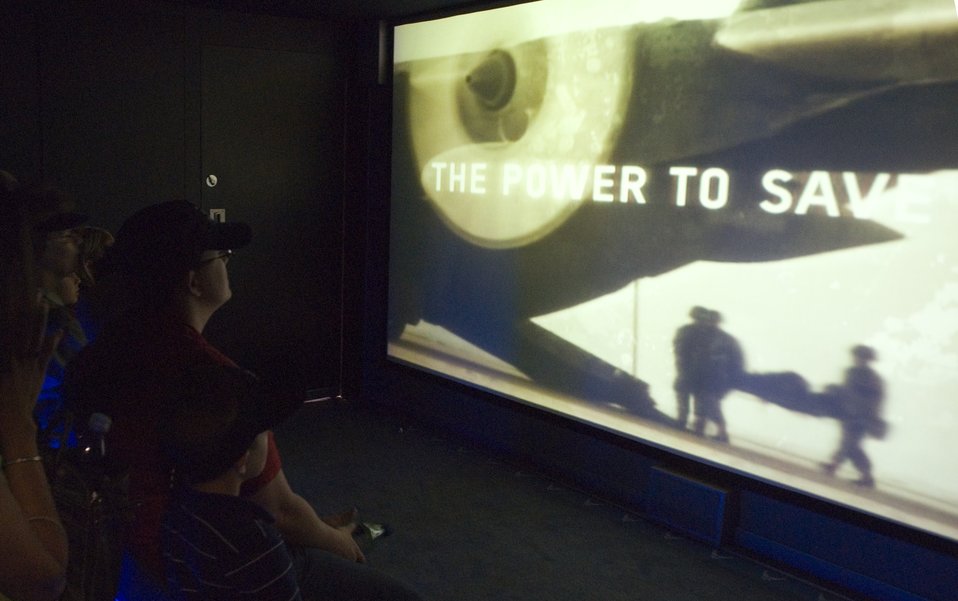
Air Force Week in the Heartland reaches out to Omaha zoo

Visitors to the Do Something Amazing mobile theater witness what the Air Force is all about Aug. 12 at the Henry Doorly Zoo in Omaha, Neb. Zoo visitors had a chance to see an F-16 Fighter Falcon, a motion simulator, video simulators and Air Force Honor Guard drill team performances.